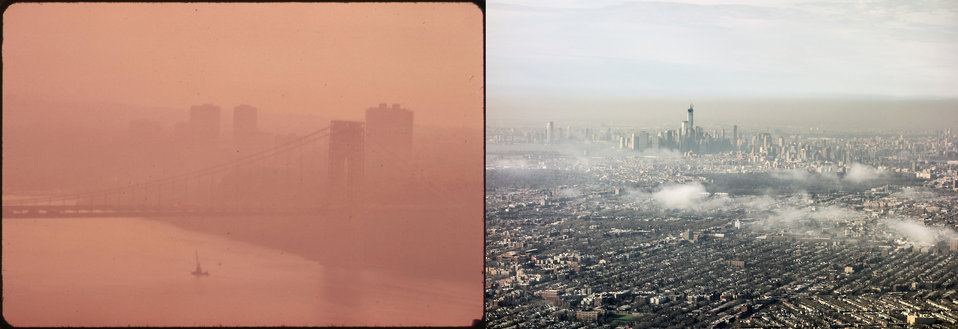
Are we better off? NY Skyline 40 Years Later

State of the Environment is your chance to answer that question. Thanks to Ken Mccown for his Flickr contribution, we can see the change from 1973. Better? Yes, but new challenges await. We are not there yet.

What does your camera have to show for the State of our Environment today?

Then: 'The George Washington Bridge in Heavy Smog. View toward the New Jersey Side of the Hudson River. May, 1973 ' photo by Chester Higgins for Documerica.

Now: 'Thermal Inversion Freedom Tower,' March 10, 2013 by ken mccown on Flickr.